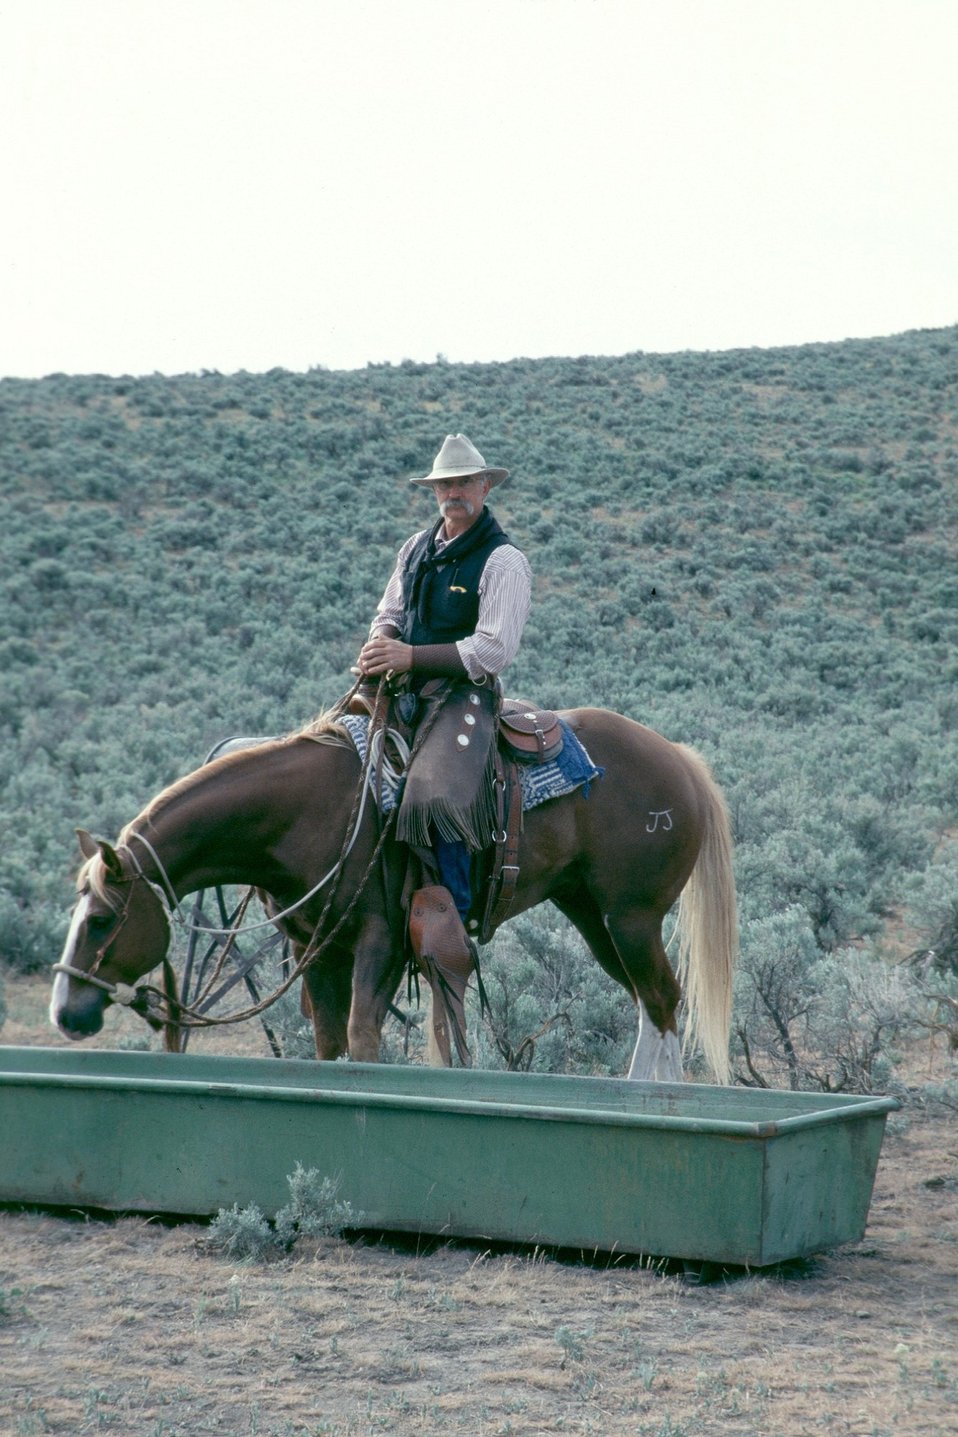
NHOTIC 10th Anniversary. Pioneer on horseback at water trough.